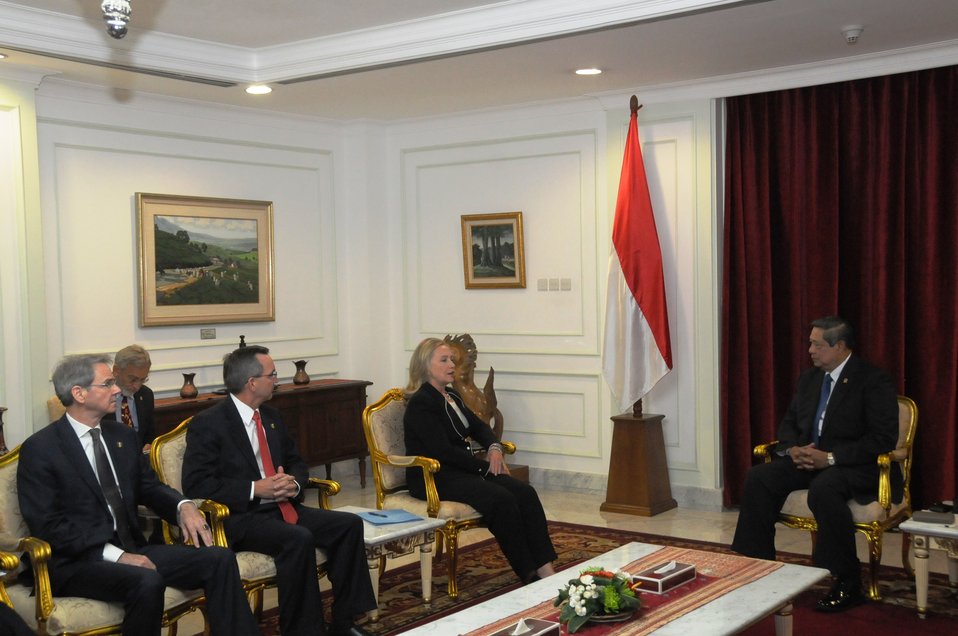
Secretary Clinton Meets With Indonesian President Yudhoyono

U.S. Secretary of State Hillary Rodham Clinton meets with Indonesian President Susilo Bambang Yudhoyono in Jakarta, Indonesia, September 4, 2012. Accompanying Secretary Clinton from right to left, are U.S. Ambassador to Indonesia Scot Marciel and U.S. Ambassador to ASEAN David Carden.